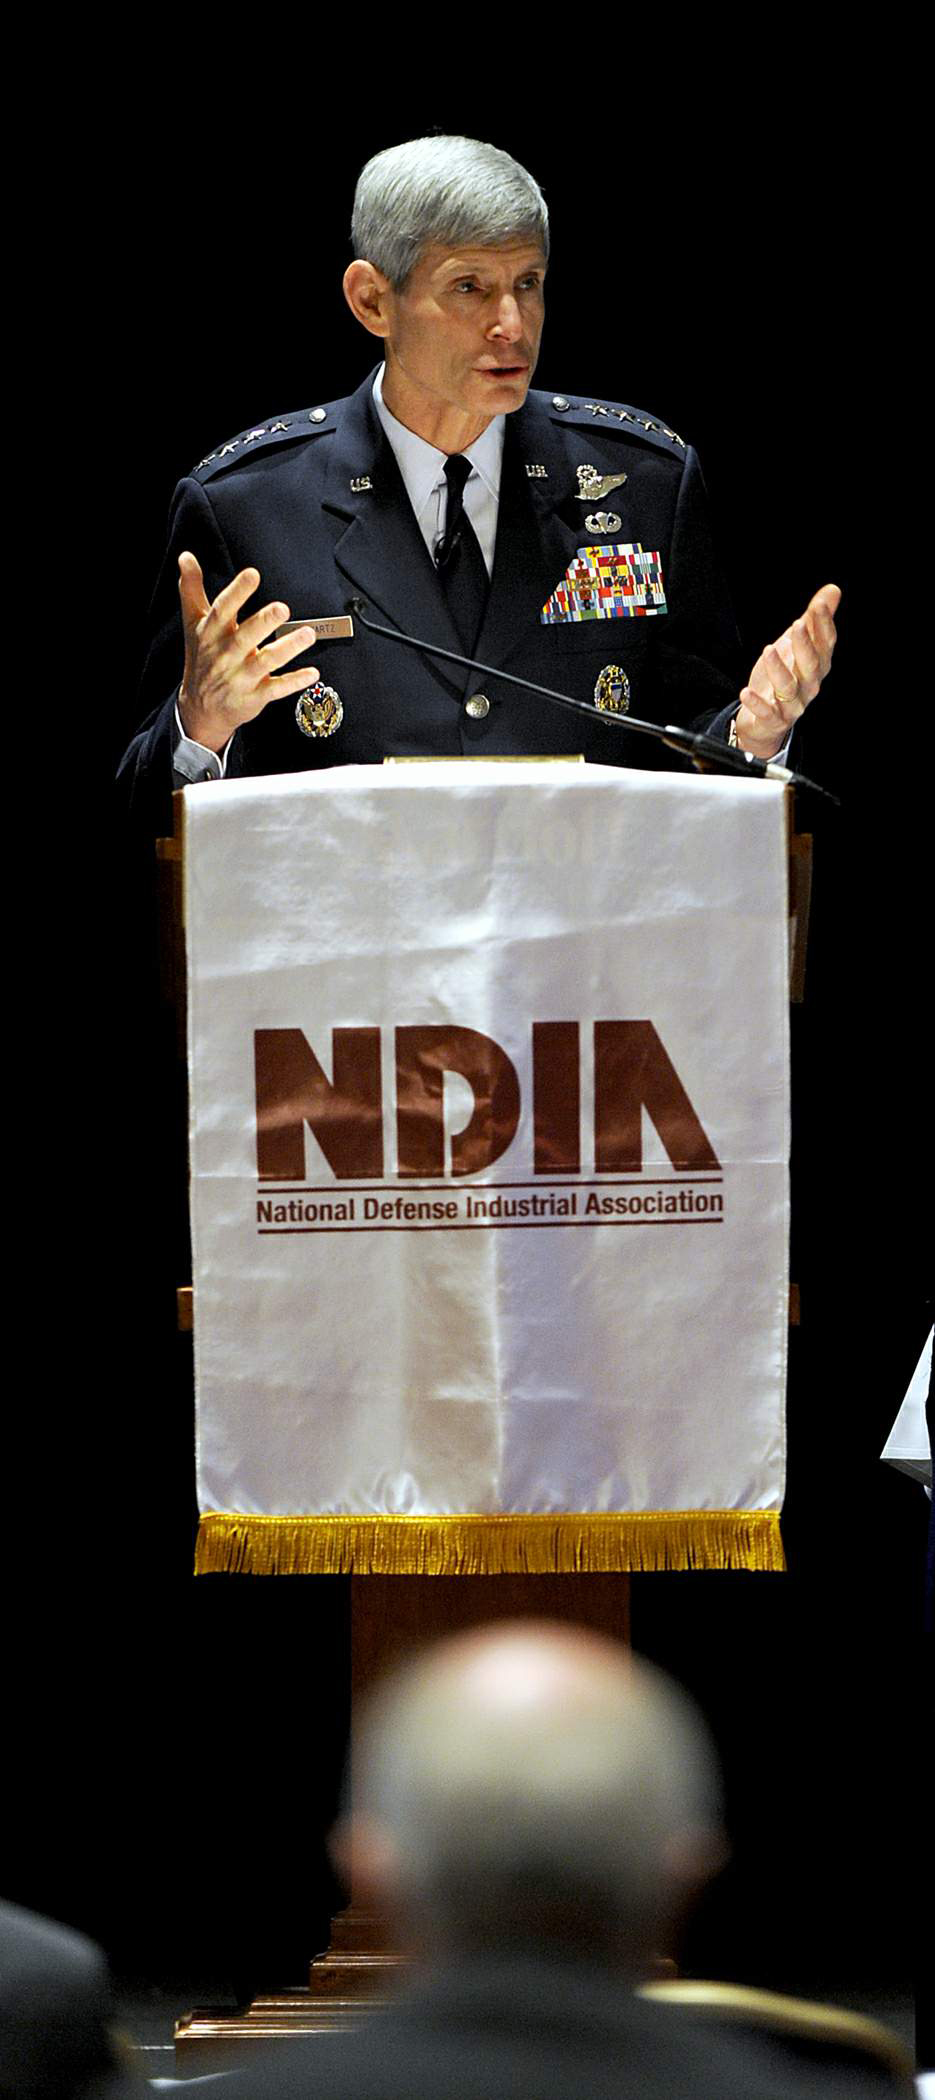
General Schwartz talks past, present of special ops

Air Force Chief of Staff Gen. Norton Schwartz discusses special operations forces during the National Defense Industrial Association's 22nd Annual Special Operations/Low Intensity Conflict Symposium Feb. 9, 2011, in Washington.